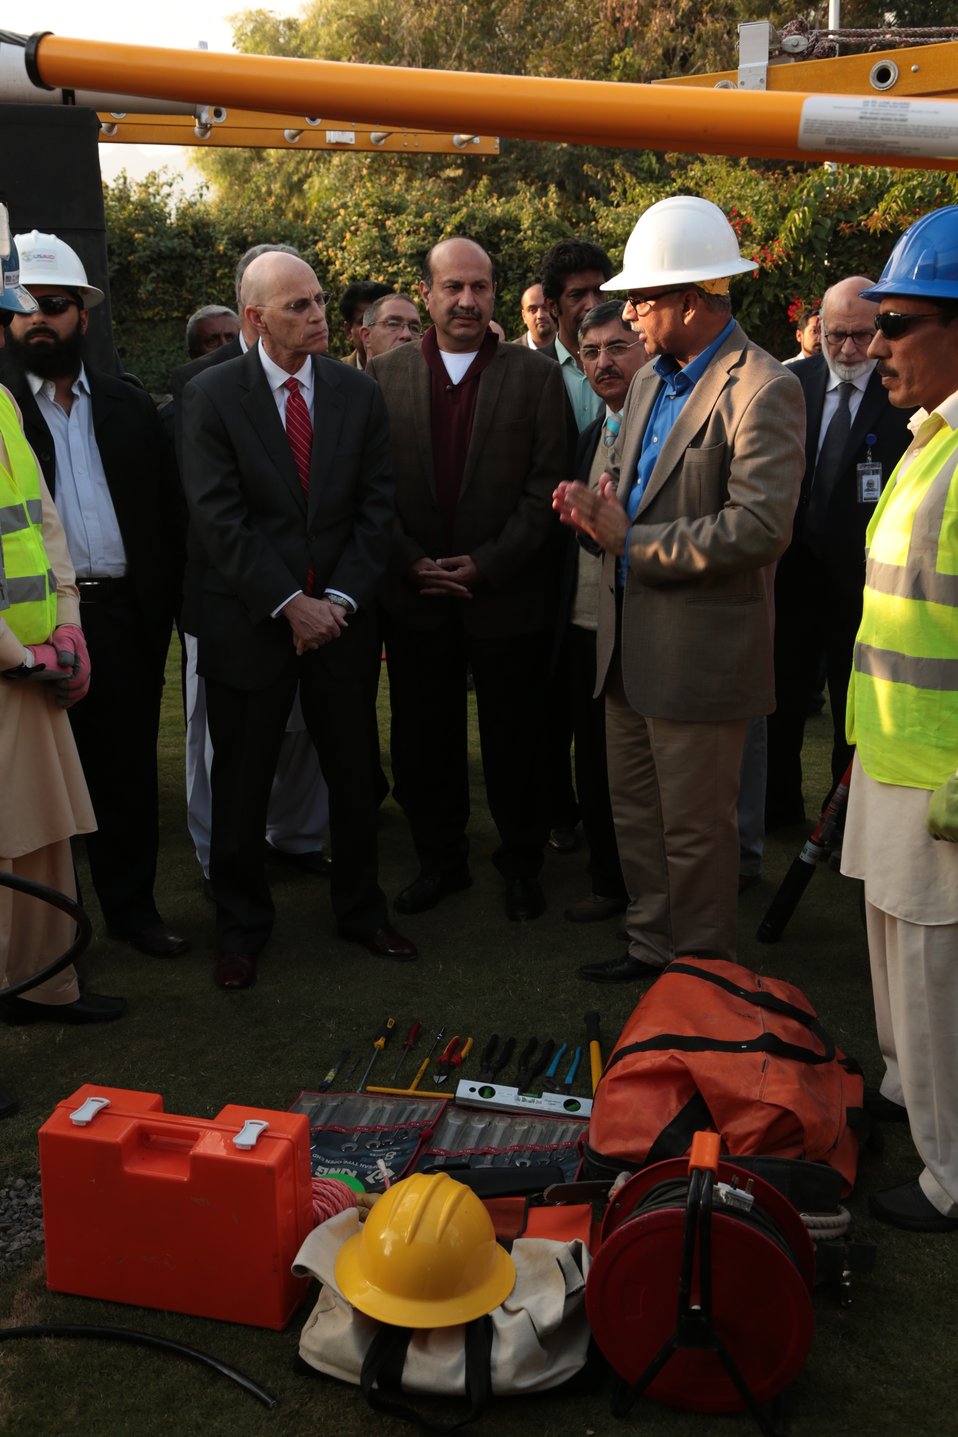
United States Government Strengthens PESCO Field Operations 18